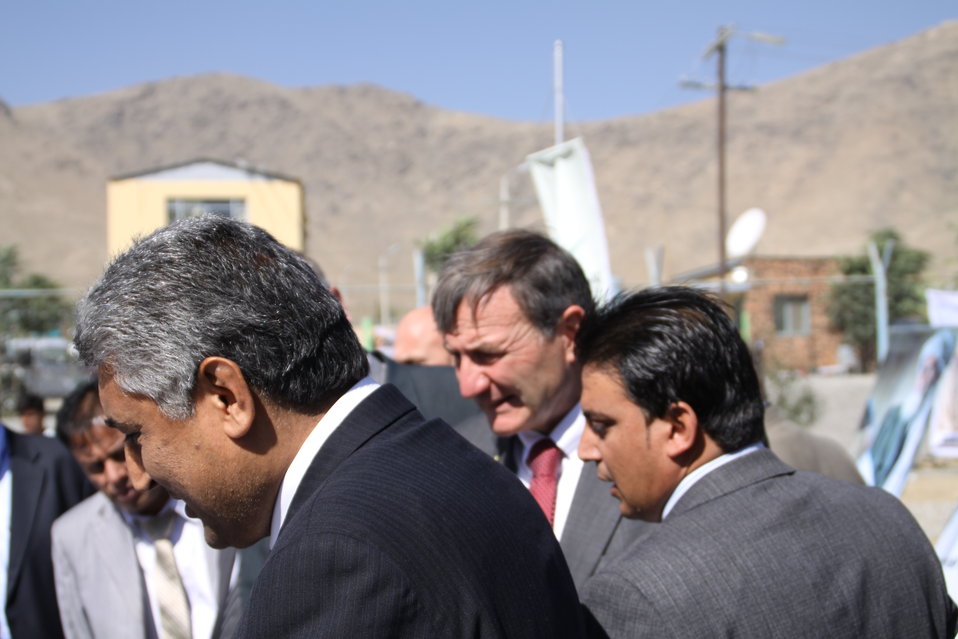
AVIPA Plus Wheat Seed Distribution 101005

US Ambassador Karl Eikenberry and USAID Acting Mission Director Kevin Brownawell joined the Minister of Agriculture, Irrigation and Livestock, H.E. Minister Mohammed Rahimi in signing a Memorandum of Understanding and distributing vouchers to area farmers for wheat and fertilizer.

US Ambassador Karl Eikenberry and USAID Acting Mission Director Kevin Brownawell joined the Minister of Agriculture, Irrigation and Livestock, H.E. Minister Mohammed Rahimi in signing a Memorandum of Understanding and distributing vouchers to area farmers for wheat and fertilizer.